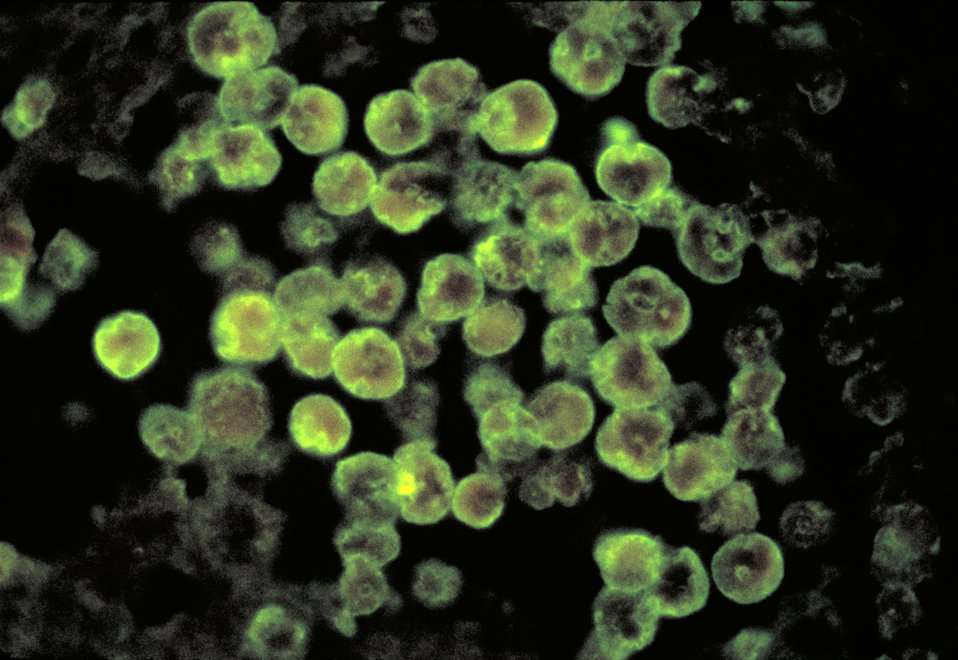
Using the direct fluorescent antibody (DFA) staining techinique, this photomicrograph depicts the histopathologic characteristics associated with a case of amebic meningoencephalitis due to Naegleria fowleri parasites.